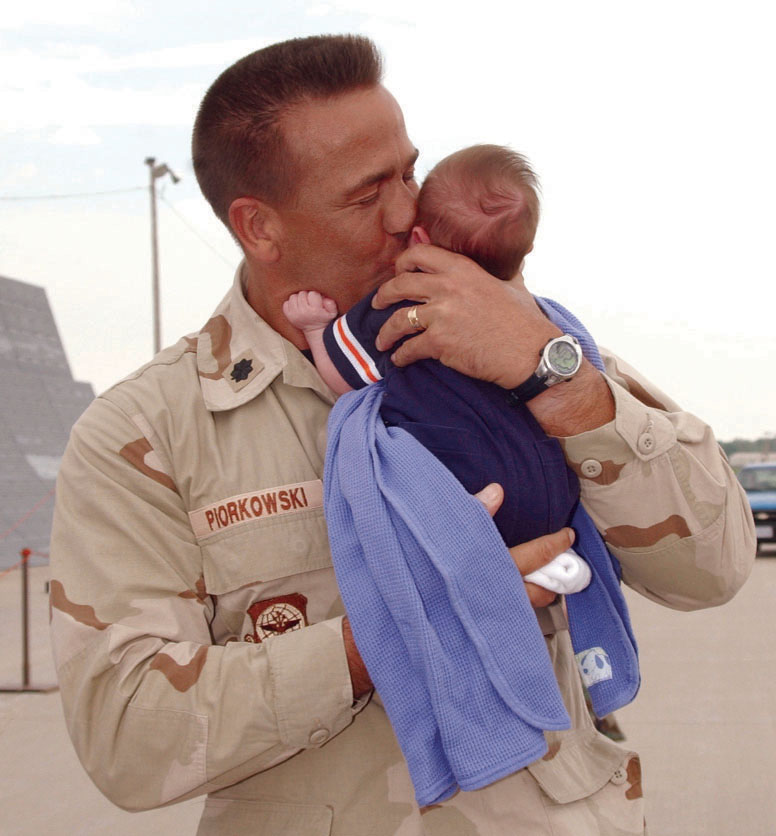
Father and son

MCCONNELL AIR FORCE BASE, Kan. -- Lt. Col. Gary Piorkowski kisses his 3-week-old son, Jake, for the first time. Piorkowski is assigned to the 22nd Medical Group here. He returned May 2 after supporting Operation Iraqi Freedom for more than two and a half months.